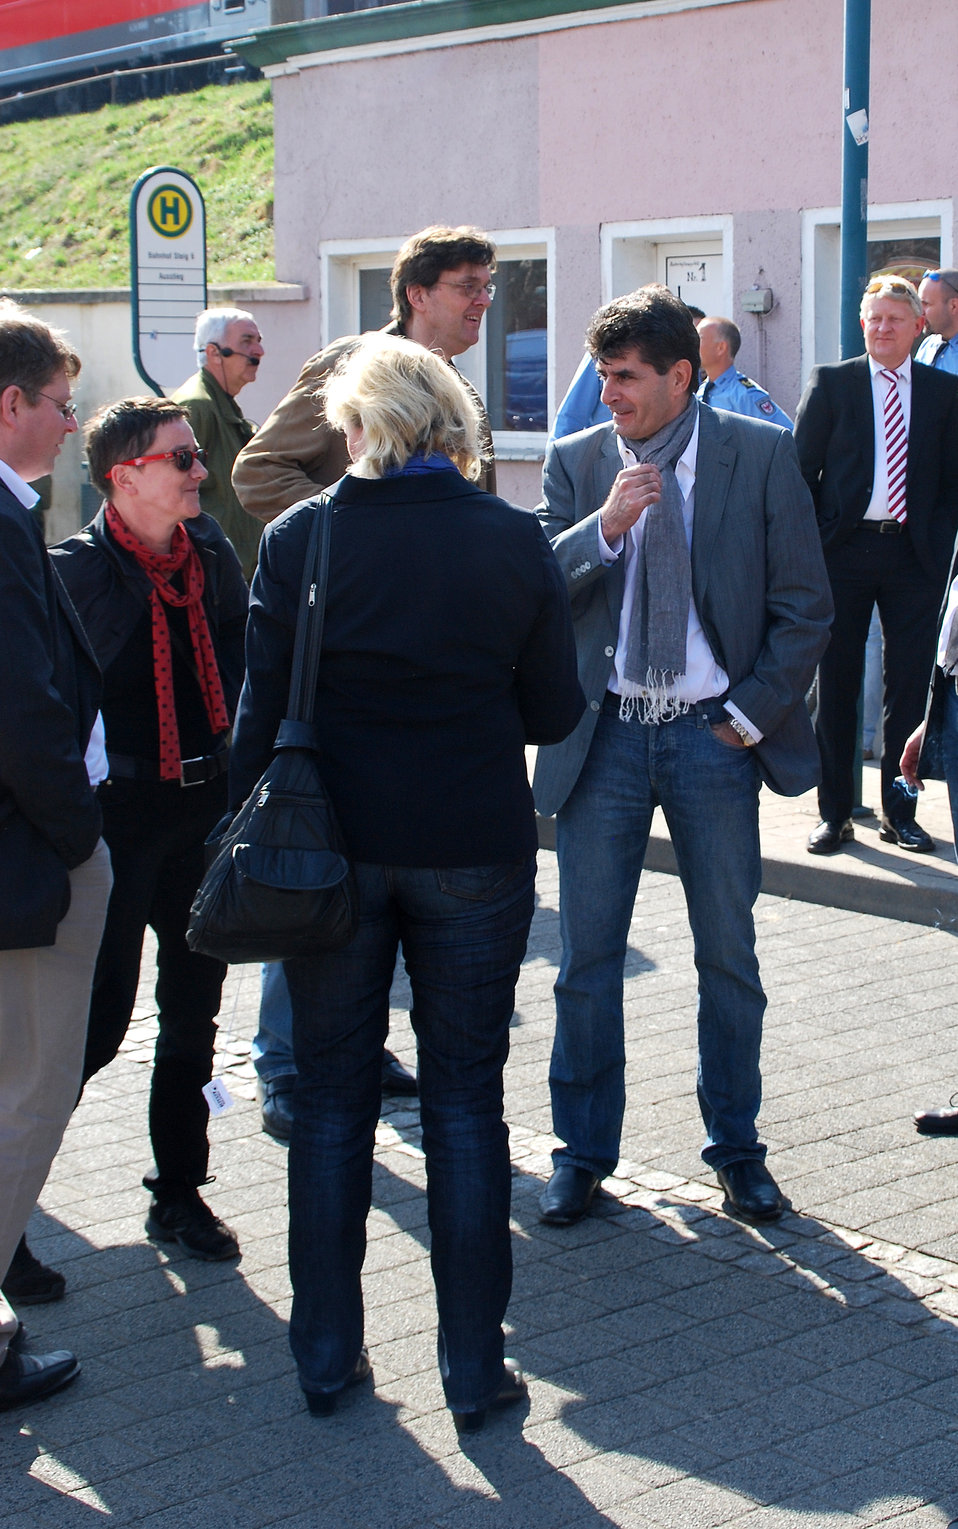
Proteste gegen den Nazi-Aufmarsch am 24.3.2012 in Frankfurt (Oder), mit Martin Wilke, Oberbürgermeister der Stadt Frankfurt (Oder), Claudia Possardt, Kämmerin der Stadt Frankfurt (Oder) und weiteren Vertretern der Stadt Frankfurt (Oder)